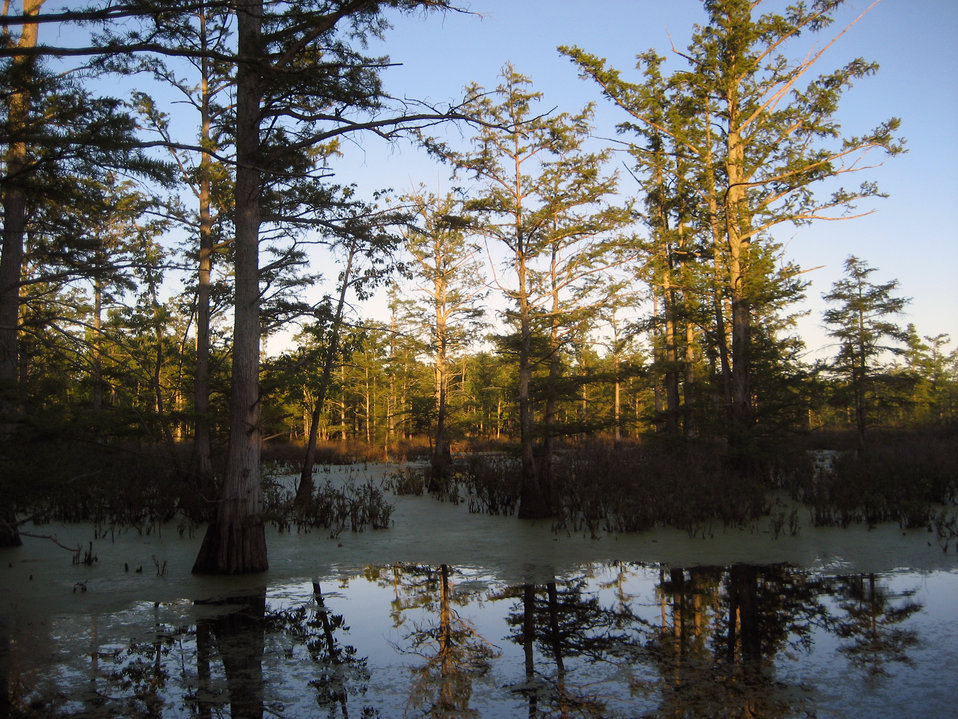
Reflections at Cypress Creek National Wildlife Refuge

Cypress Creek National Wildlife Refuge.